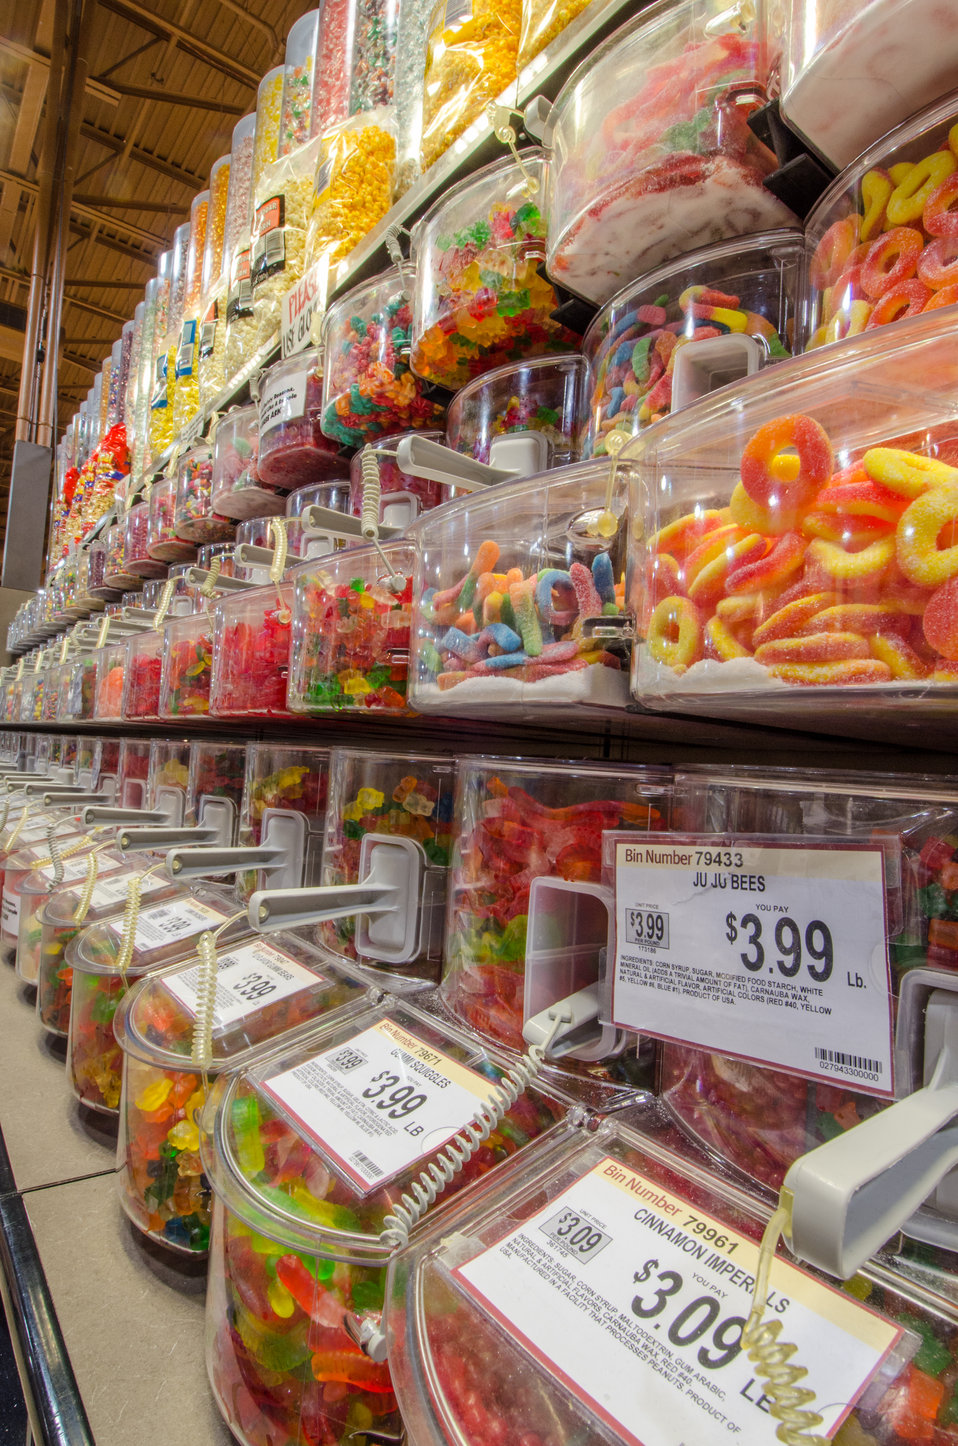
Candy in self-serve bins, at a grocery store in Fairfax, Virginia, on March 3, 2011.